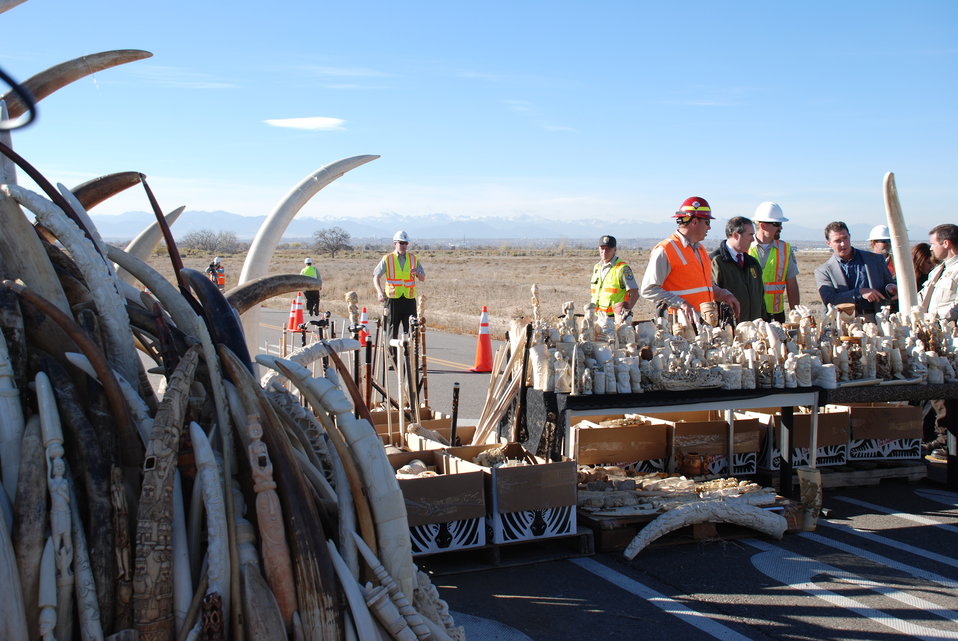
Ivory Crush 2013